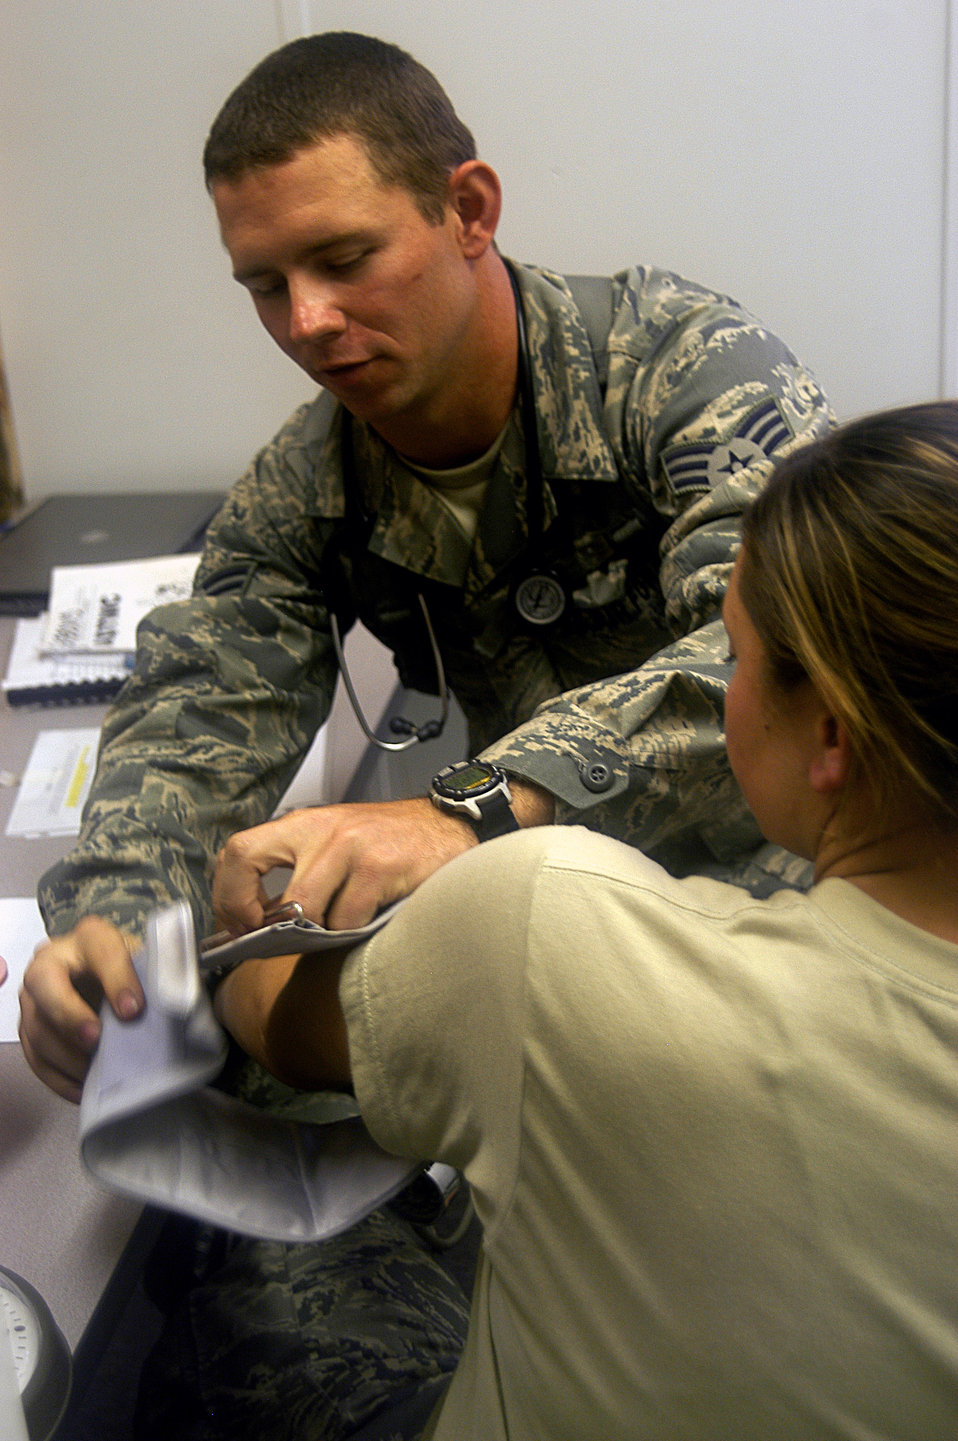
Airman immerses into language for deployment

Senior Airman George Williams applies a blood pressure cuff to a patient at a